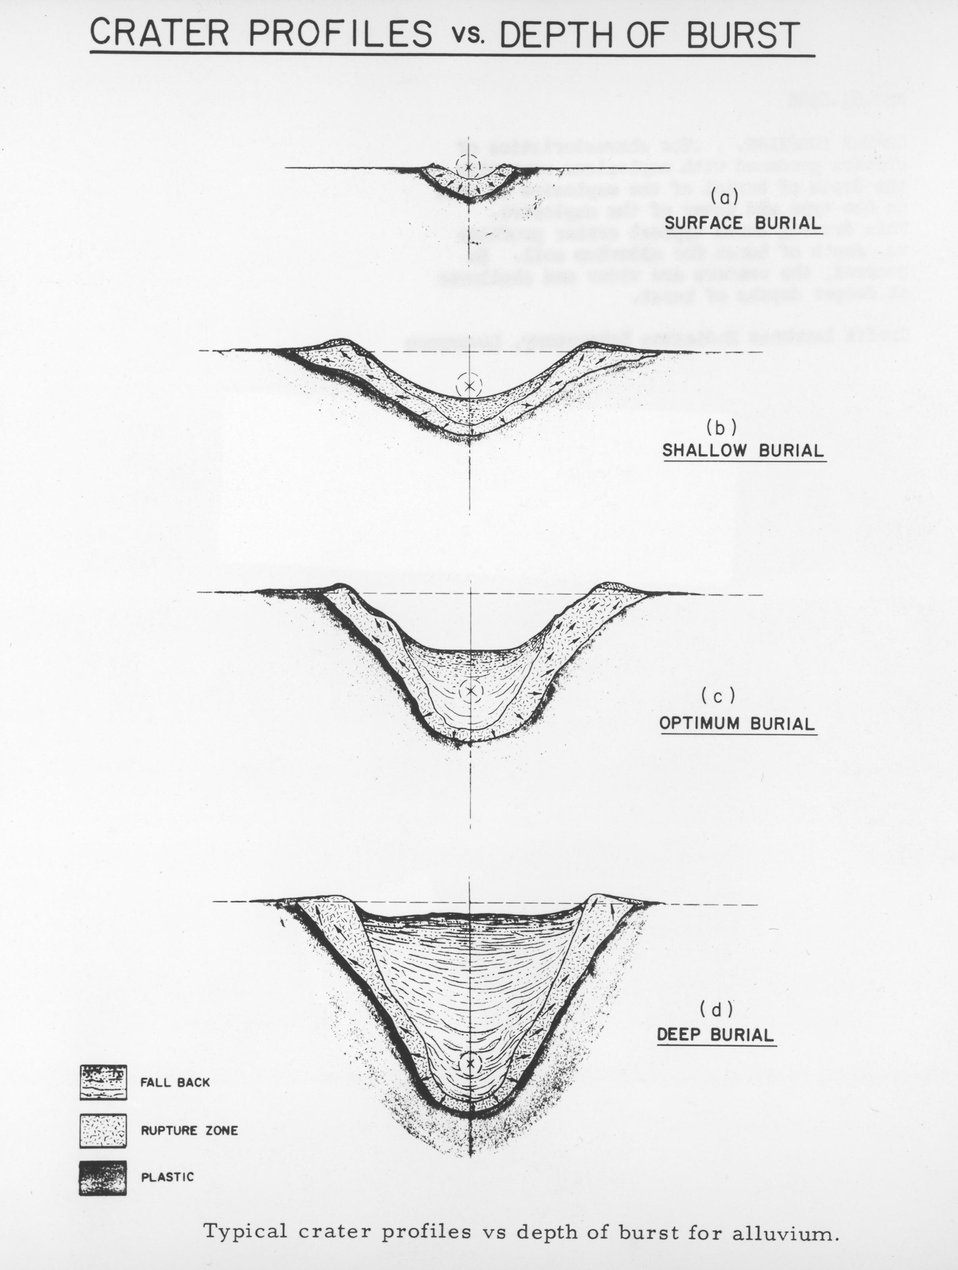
The characteristics of craters produced with explosions vary with the depth of burial of the explosive as well as the type and power of the explosive. c. 1963